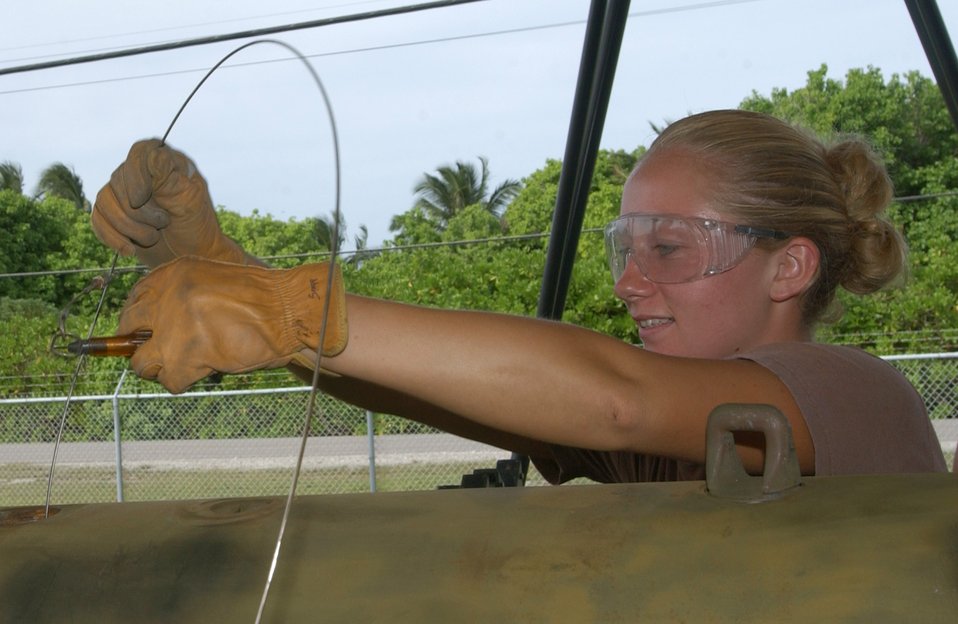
Ammo, weapons Airmen get job done despite friendly rivalry

OPERATION ENDURING FREEDOM -- Airman 1st Class Jessica Snapp installs a fuse in a joint-direct attack munition at a forward-deployed location. Airman Snapp is assigned to the 40th Expeditionary Maintenance Squadron and is deployed from Whiteman Air Force Base, Mo.